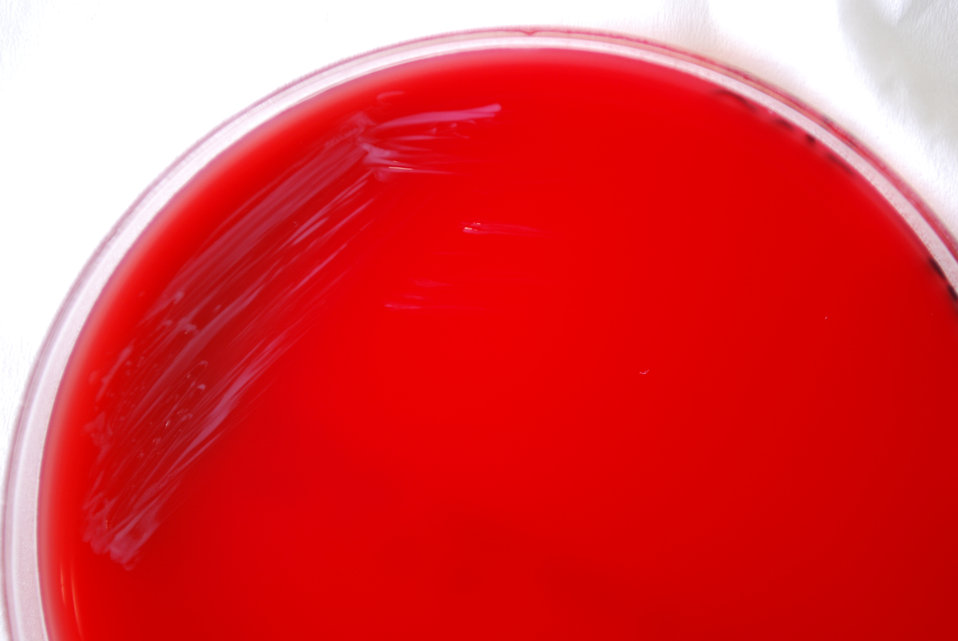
A closer view of PHIL 12205, this photograph depicts the colonial morphology displayed by Gram-negative Brucella abortus bacteria, which was grown on a medium of sheep's blood agar (SBA), for a 24 hour time period, at a temperature of 37�C.